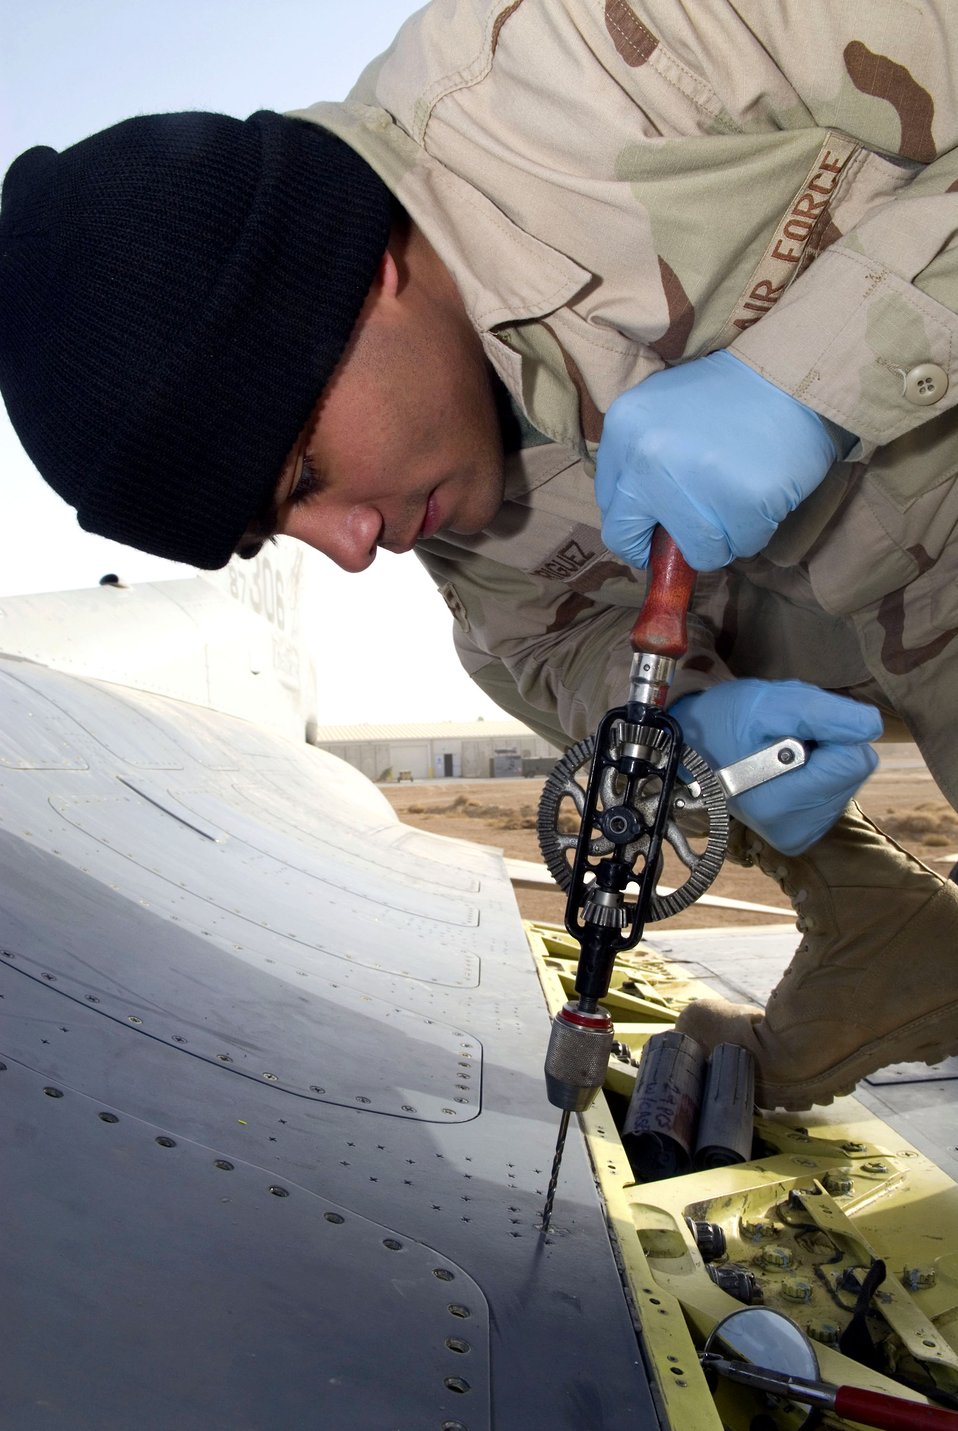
Nuts and bolts

Airman 1st Class Noe Rodriguez manually drills a Hi-Lok fastener on an F-16 Fighting Falcon fuel cell Dec. 22 at Balad Air Base, Iraq. Airman Rodriguez must use manual- or air-powered tools on the aircraft fuel cells because an electric drill could ignite fuel inside the aircraft. Airman Rodriguez, a 332nd Expeditionary Maintenance Squadron sheet metal technician, is deployed from Spangdahlem Air Base, Germany.